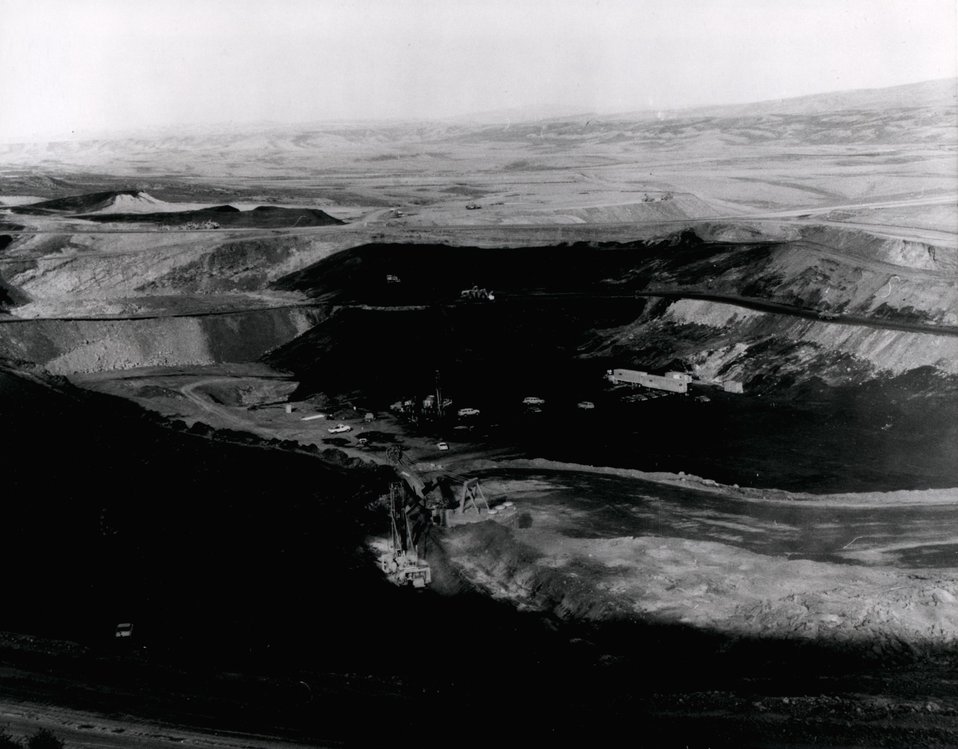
As a part of the U.S. Department of Energy's project to determine if underground gasification of deep coal seams is feasible, a team of scientists and engineers from the Lawrence Livermore Laboratory have conducted experiments centering around the use of small charges of chemical high explosives at a coal outcrop of the Kemmerer Coal Company in Kemmerer, Wyoming. In this photograph, a drilling operation is being conducted in a whole being drilled at Kemmerer. Circa 1975.